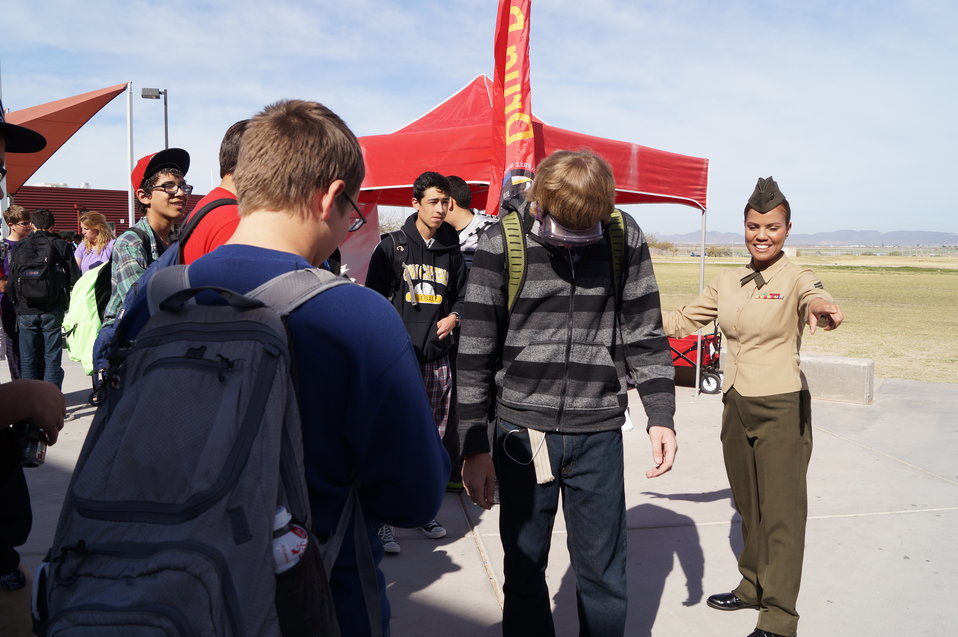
National Drug Facts Week - GILA RIDGE HS

The Drug Demand Reduction Program out of Yuma Arizona held numerous events at local schools to support NIDA's National Drug Facts Week, Jan. 27-Feb. 2 2014. Teens participated in drug awareness games, and helped to Shatter the Myths about teen substance abuse.